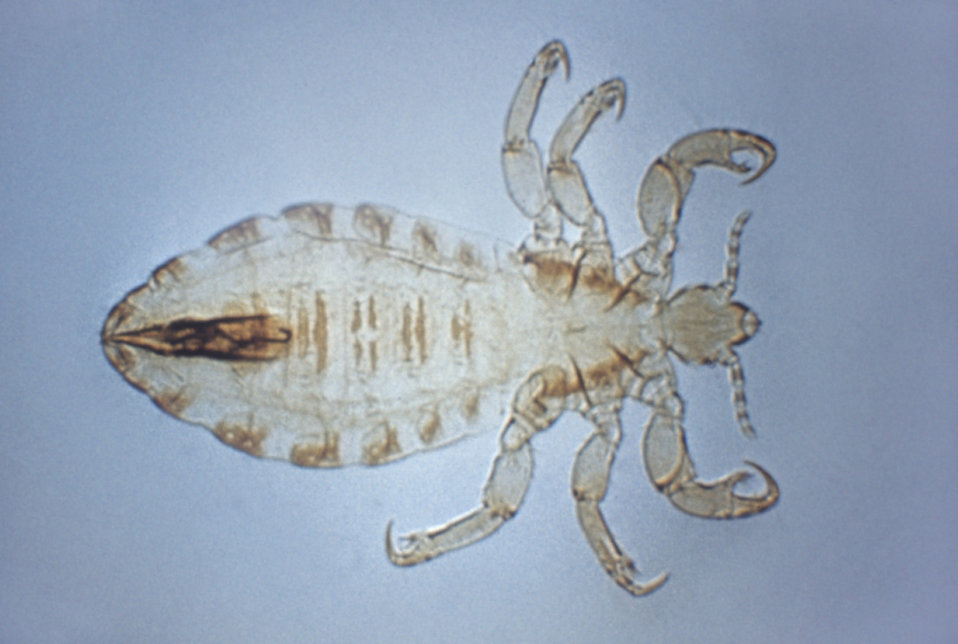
This body louse, Pediculus humanus corporis, was photographed during a 1972 study of migrant labor camp disease vectors.